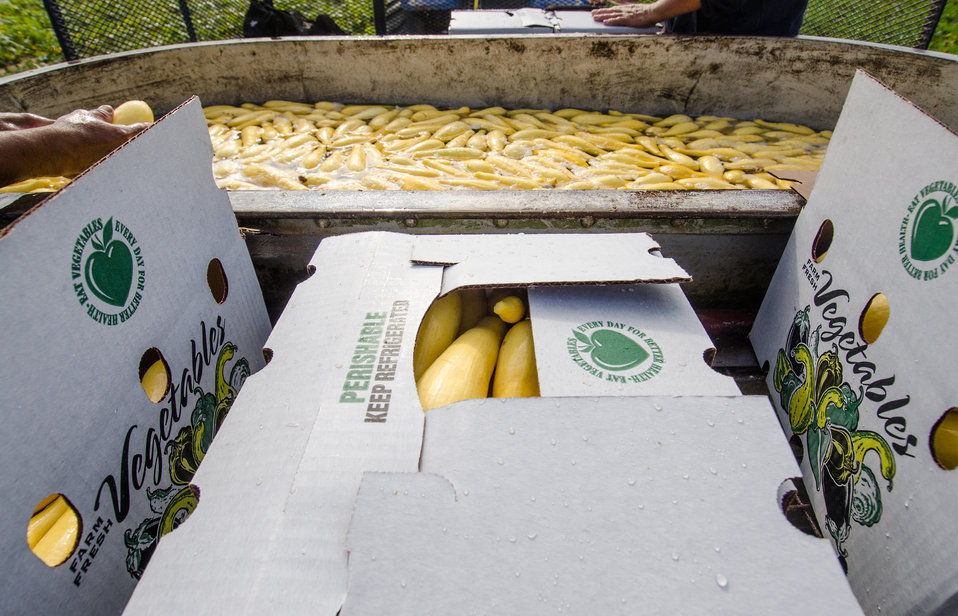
Migrant workers rinse and pack just-picked yellow squash into 1/2-bushel boxes at Kirby Farms in Mechanicsville, VA on Sep. 20, 2013. Kirby Farms is a third-generation family farm that covers 500 acres, and generates produce and grains on a year-around operation.